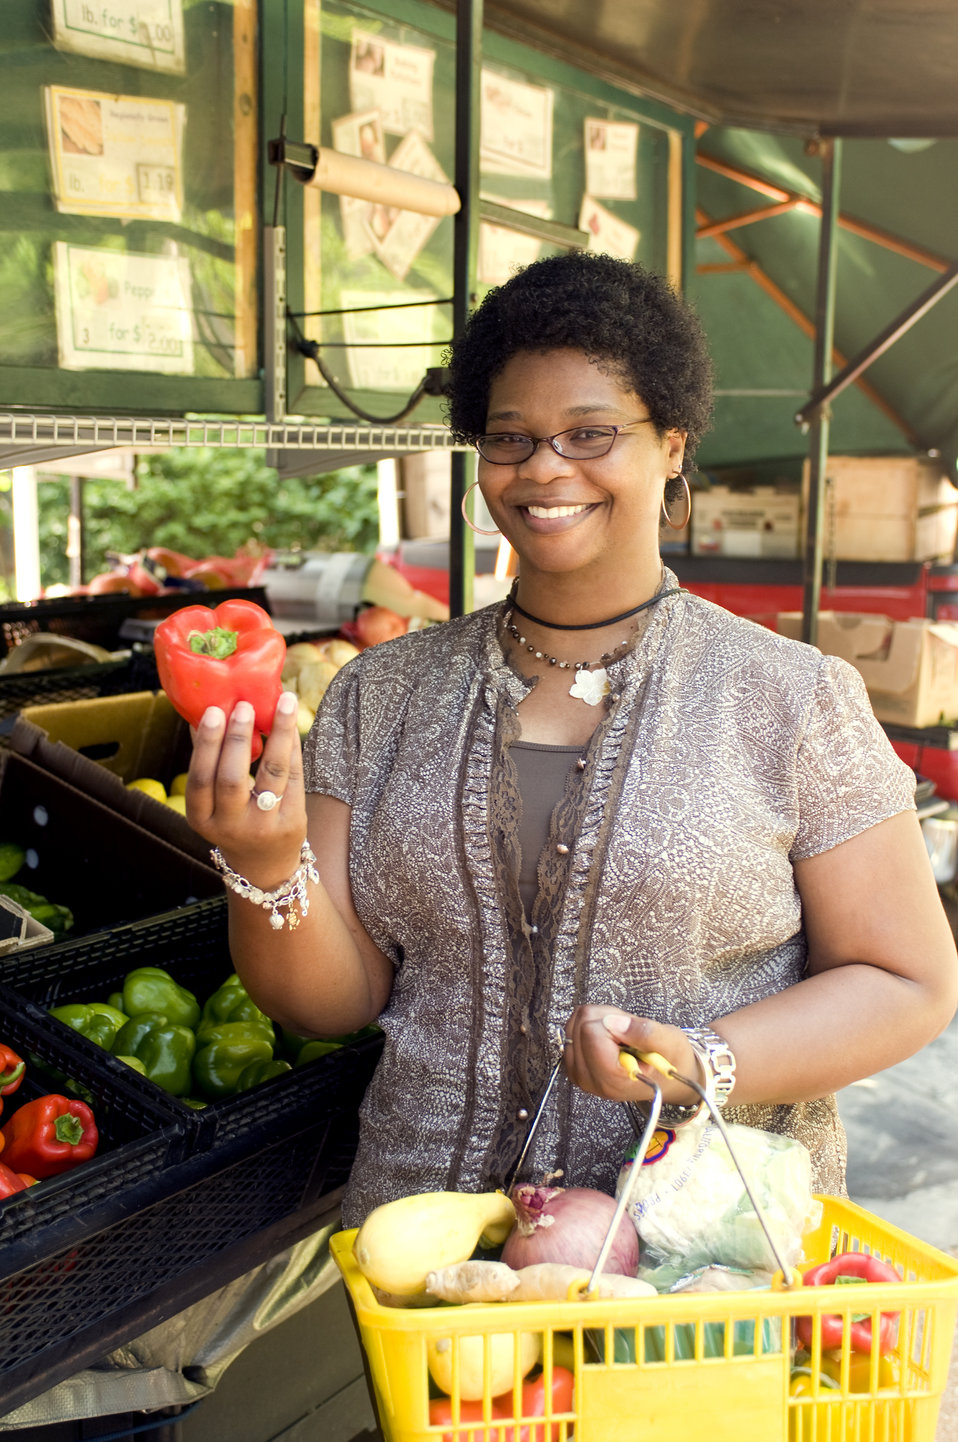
With her shopping basket filled with an array of healthy food choices, this woman had completed her selection process at a mobile produce market, and was shown holding up a bright red bell pepper. Some of the vegetables she'd placed into her basket included a lemon, a head of cauliflower, a purple and a white onion, ginger root, and a variety of bell peppers.